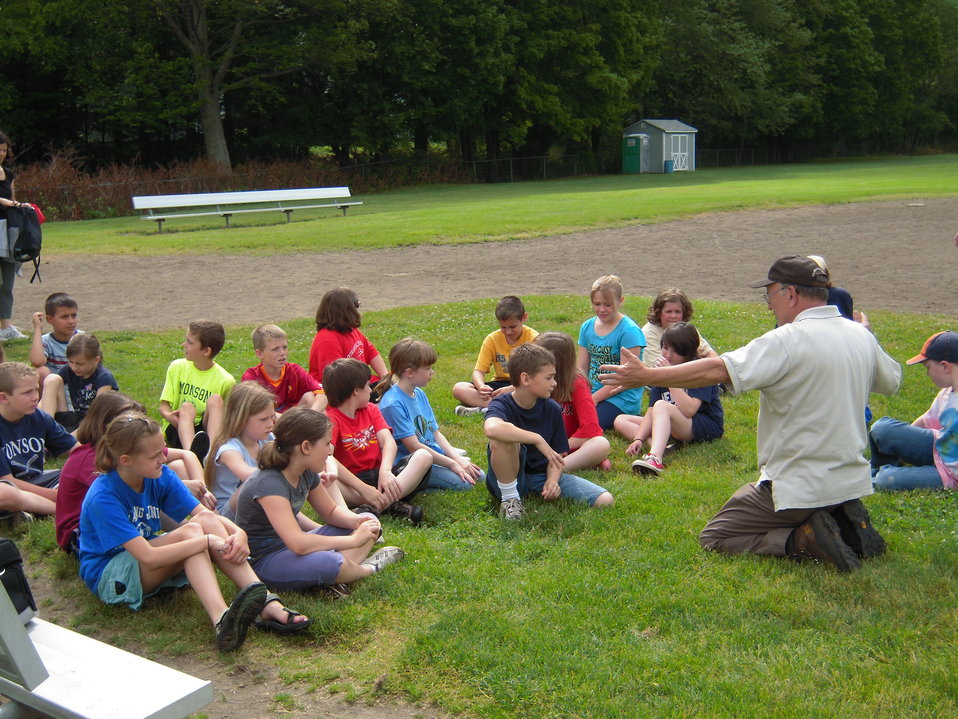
Novak talks safety